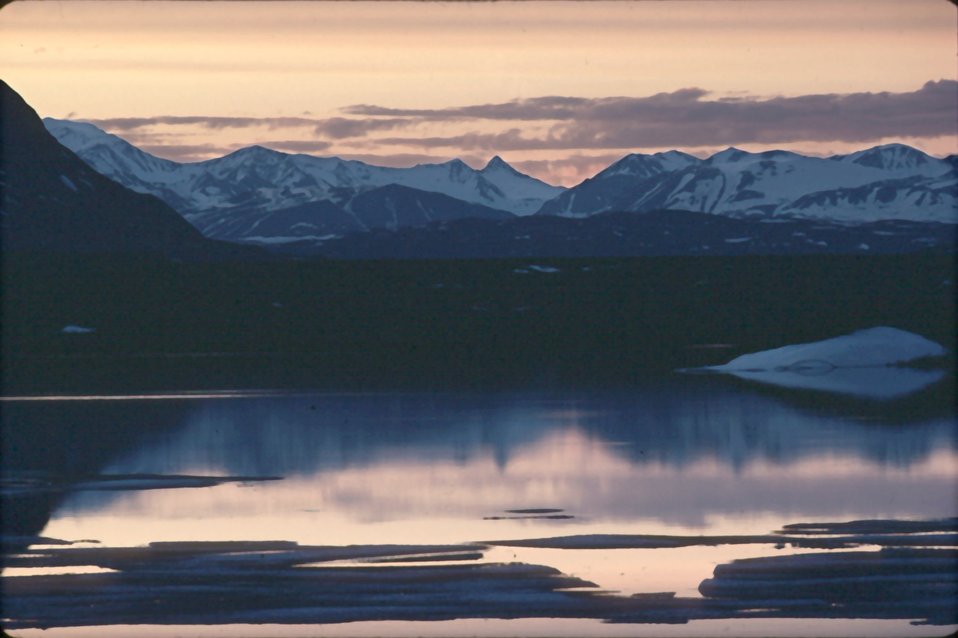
Sunset at Tangle Lakes, Denali Highway, Alaska